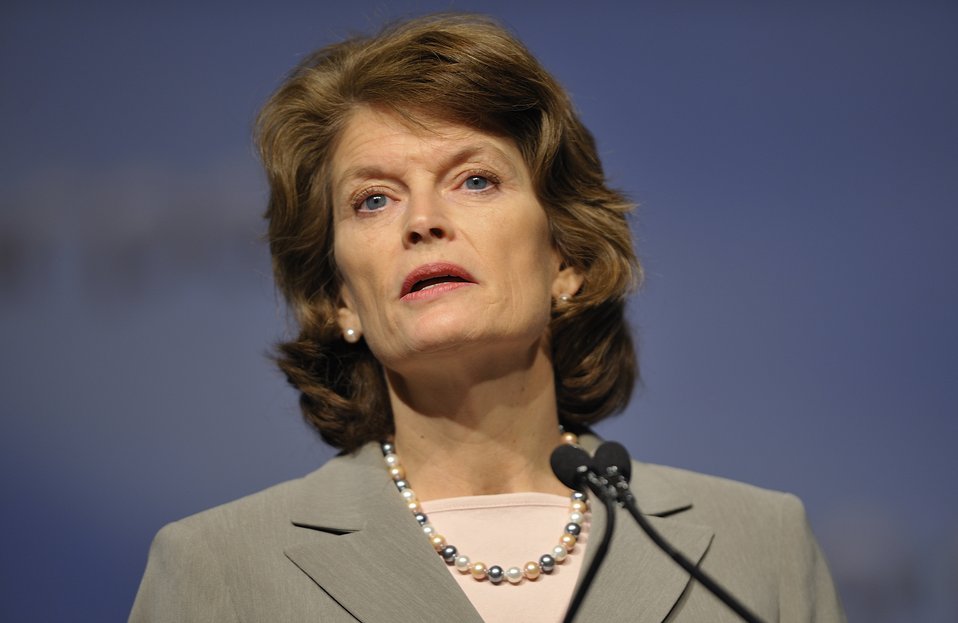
ARPA-E Energy Innovation Summit 2011, 32 of 83

Senator Lisa Murkowski (I-AK)